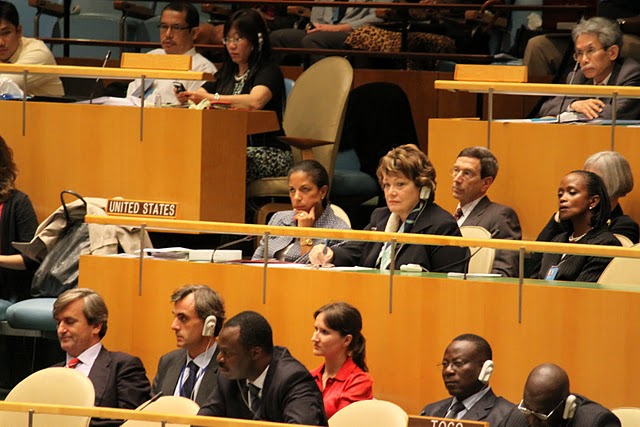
Ambassador Rice, Under Secretary Tauscher, and Assistant Secretary of State for International Organizations Participate at U.N. Nuclear Nonproliferation Conference

Ambassador Rice, Under Secretary Tauscher, and Assistant Secretary of State for International Organizations participate in the U.S.-sponsored disarmament side event at the Review Conference of the Nuclear Nonproliferation Treaty at the U.N. Headquarters, New York, New York, May 5, 2010.